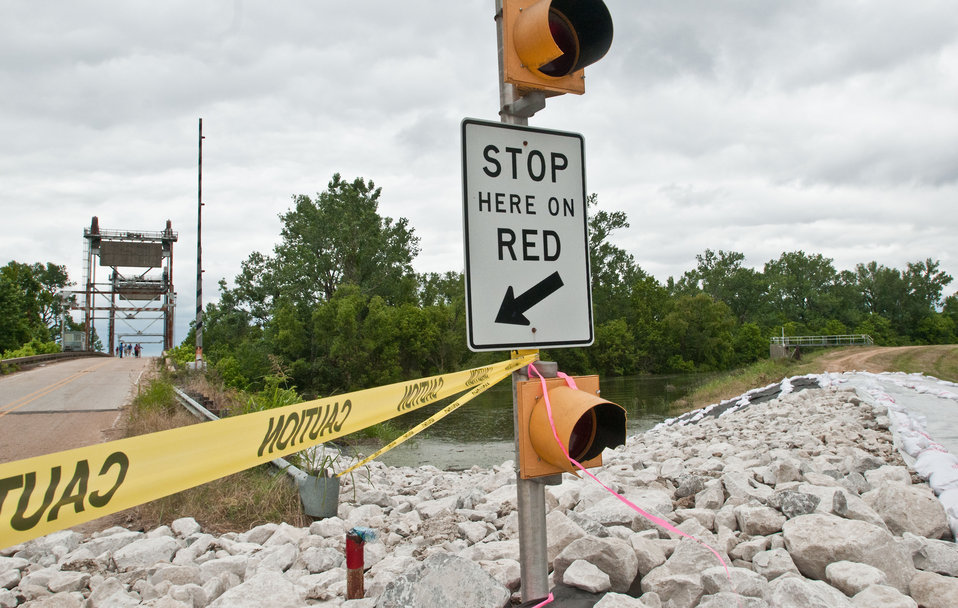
The Yazoo Mississippi Levee Board of Clarksville took emergency action more than two weeks ago by filling this roadway /bridge access across a waterway that flows through Satartia, MS, on Monday, May 16. 2011. The action was taken in preparation of the rising flood waters.